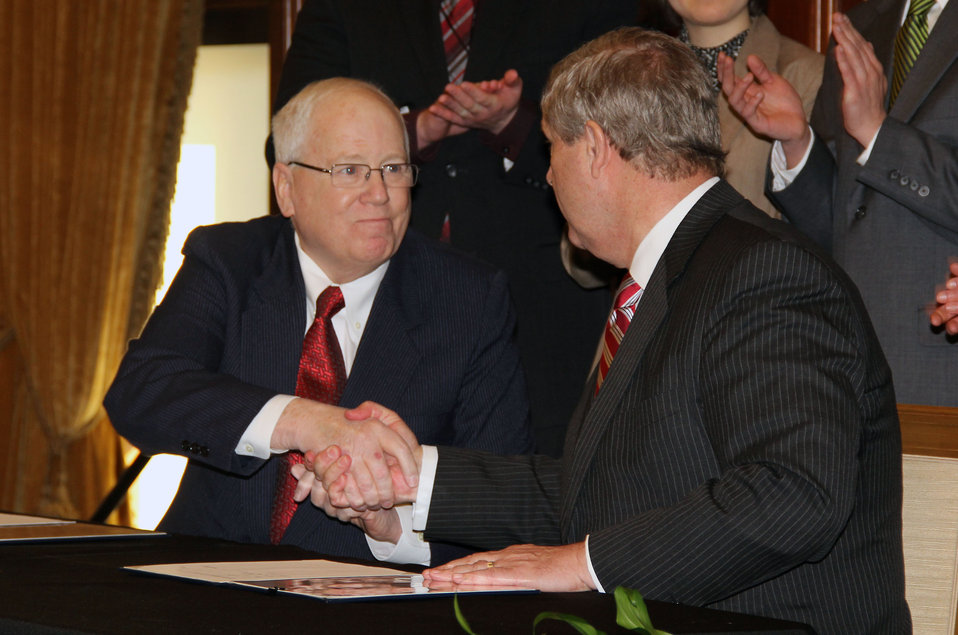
Agriculture Secretary Vilsack and former Ambassador to the Kingdom of Cambodia Kenneth M. Quinn of the World Food Prize Foundation Cement Partnership to Support USDA's Wallace-Carver Internship Program, at the World Food Prize Hall of Laureates in Des Moines, Iowa, on Feb. 19, 2013, before a crowd of 200 youth and business leaders to formalize a partnership enhancing the Wallace-Carver Internship Program for students involved in cutting-edge agriculture, science and research.